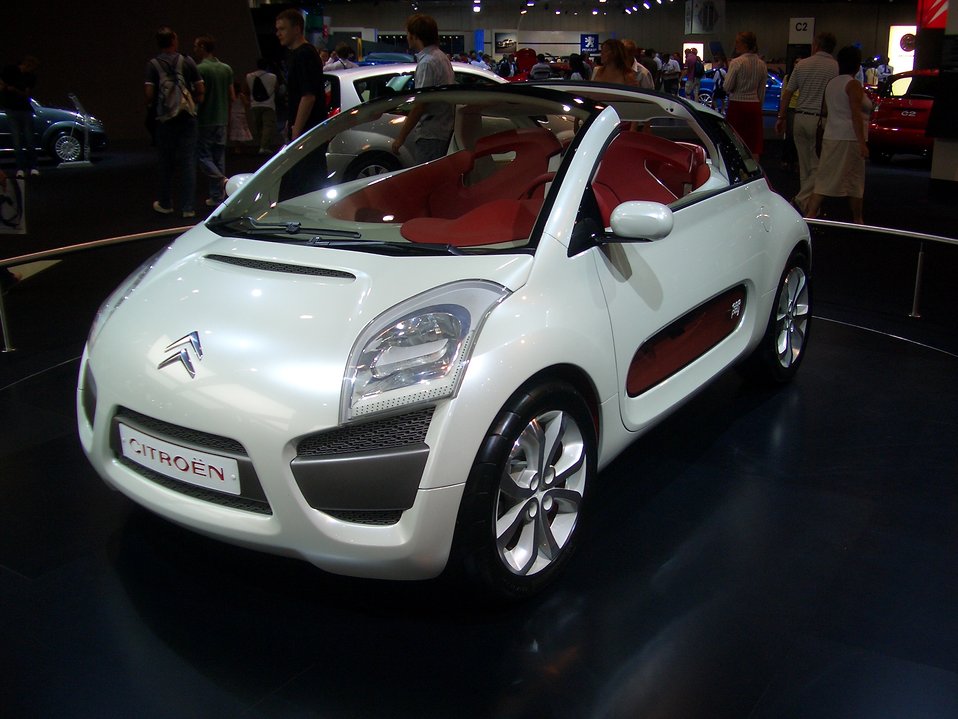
Taken by myself at London Motorshow 2006.